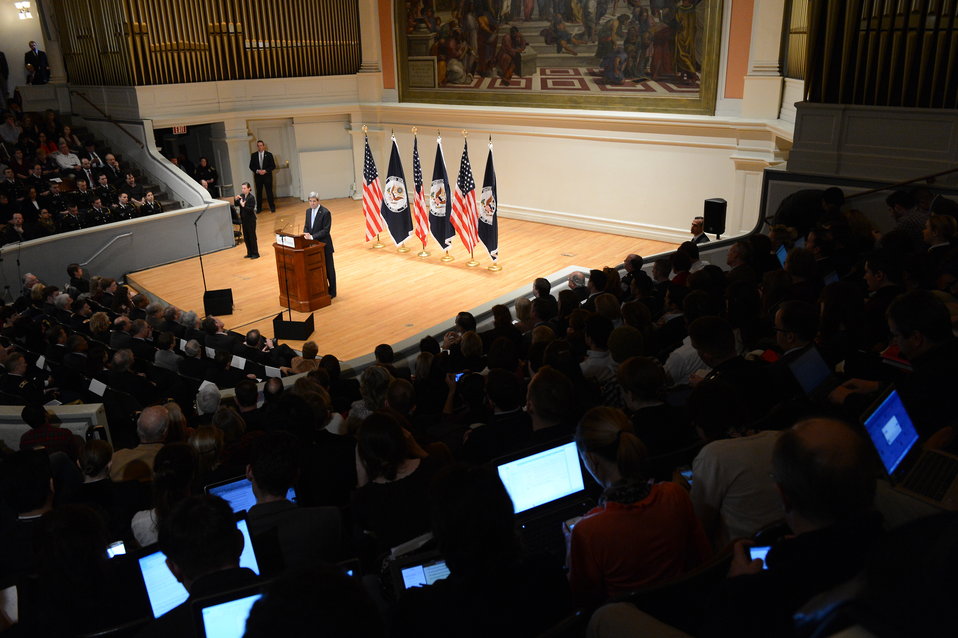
Secretary Kerry Delivers Remarks at UVA

U.S. Secretary of State John Kerry delivers remarks at the University of Virginia in Charlottesville, Virginia, February 20, 2013.